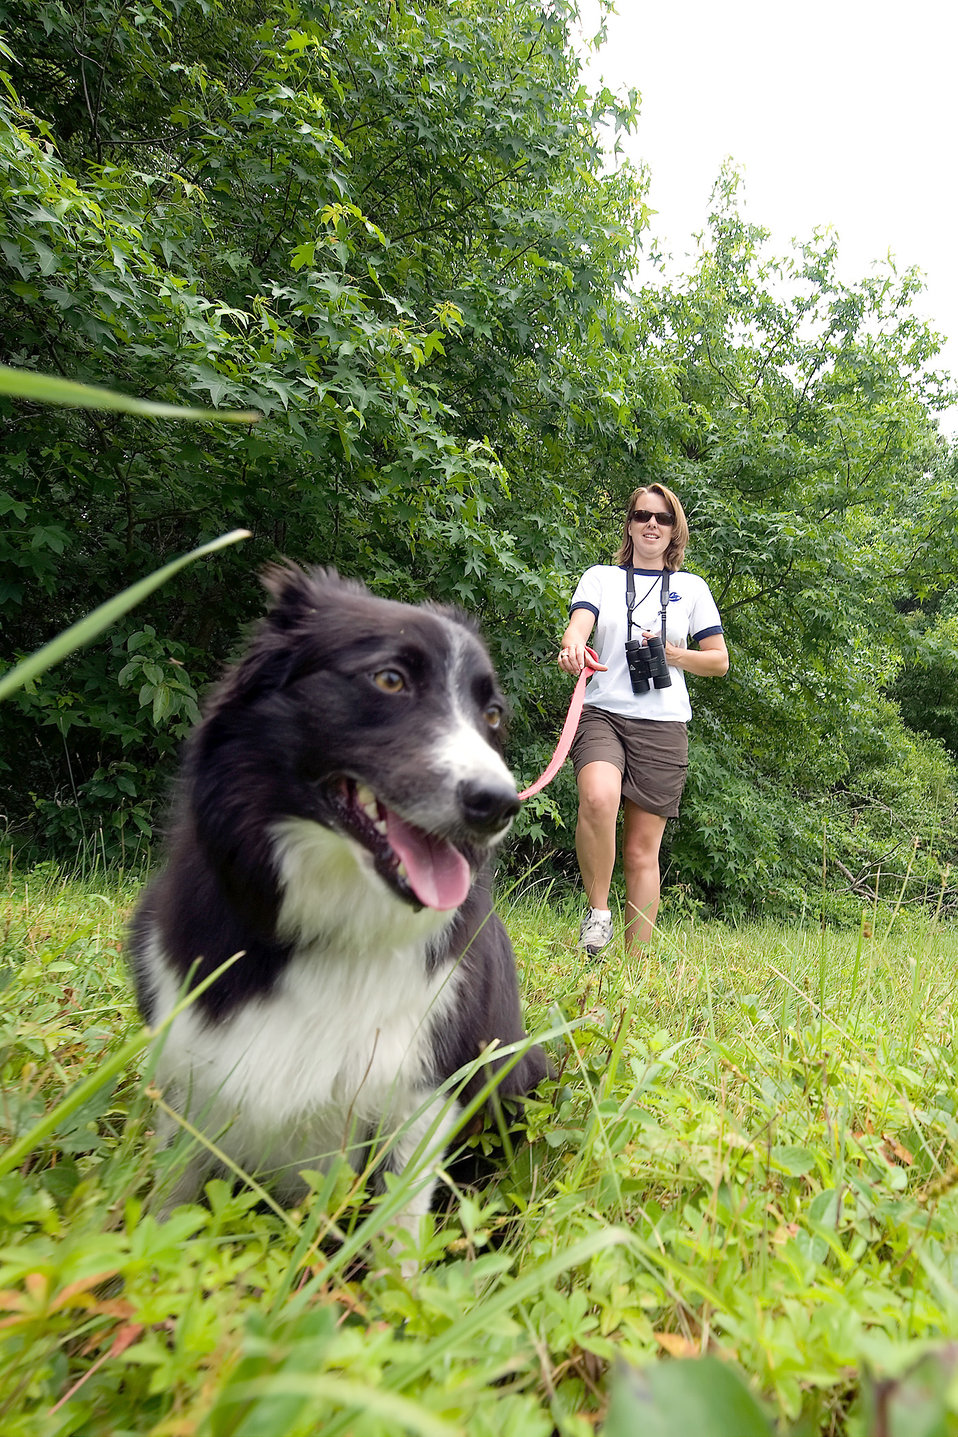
BASH

Kilo and her handler, Melody Henderson, patrol the grounds of Dover Air Force Base, Del., June 17, 2011. Mrs. Henderson is a bird/wildlife aircraft strike hazard ecologist and wildlife manager. She and Kilo are part of an effort by the Air Force to minimize bird strikes.